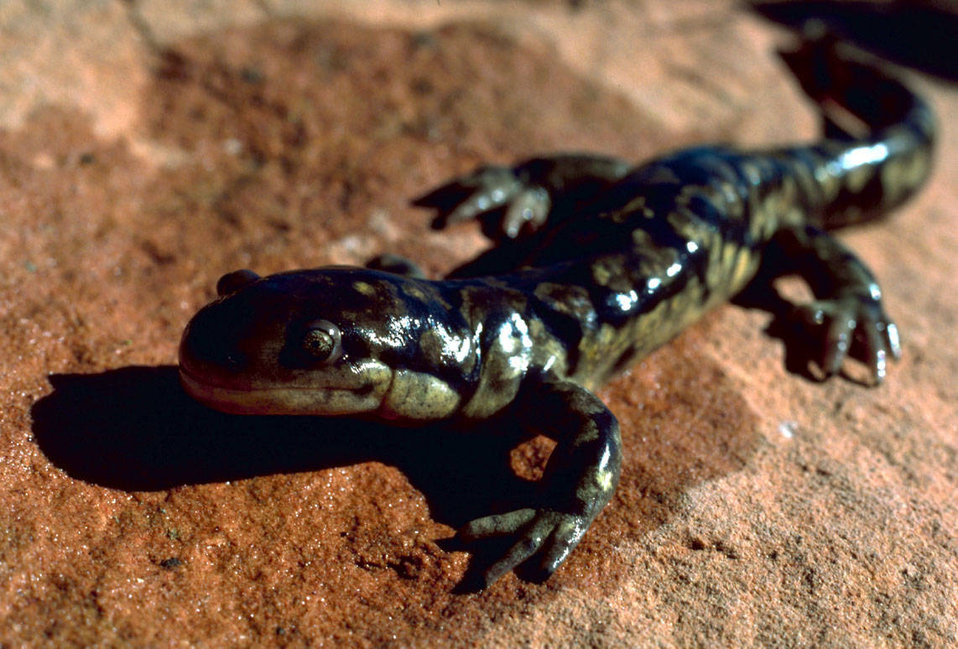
Tiger salamander

Photo credit: USFWS/Gary Stolz

Climate change could threaten amphibian species through increased flooding as well as drying